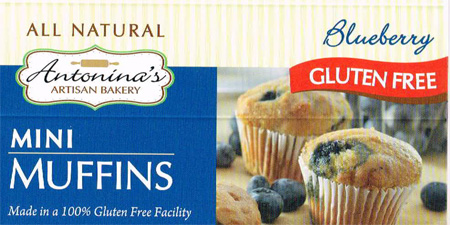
RECALLED – Gluten free blueberry mini muffins

December 12, 2013 – Product Recall – Pin Hsiao & Associates, LLC. Issues Allergy Alert on Undeclared Walnuts in Gluten Free Blueberry Mini Muffins - 12 pk.